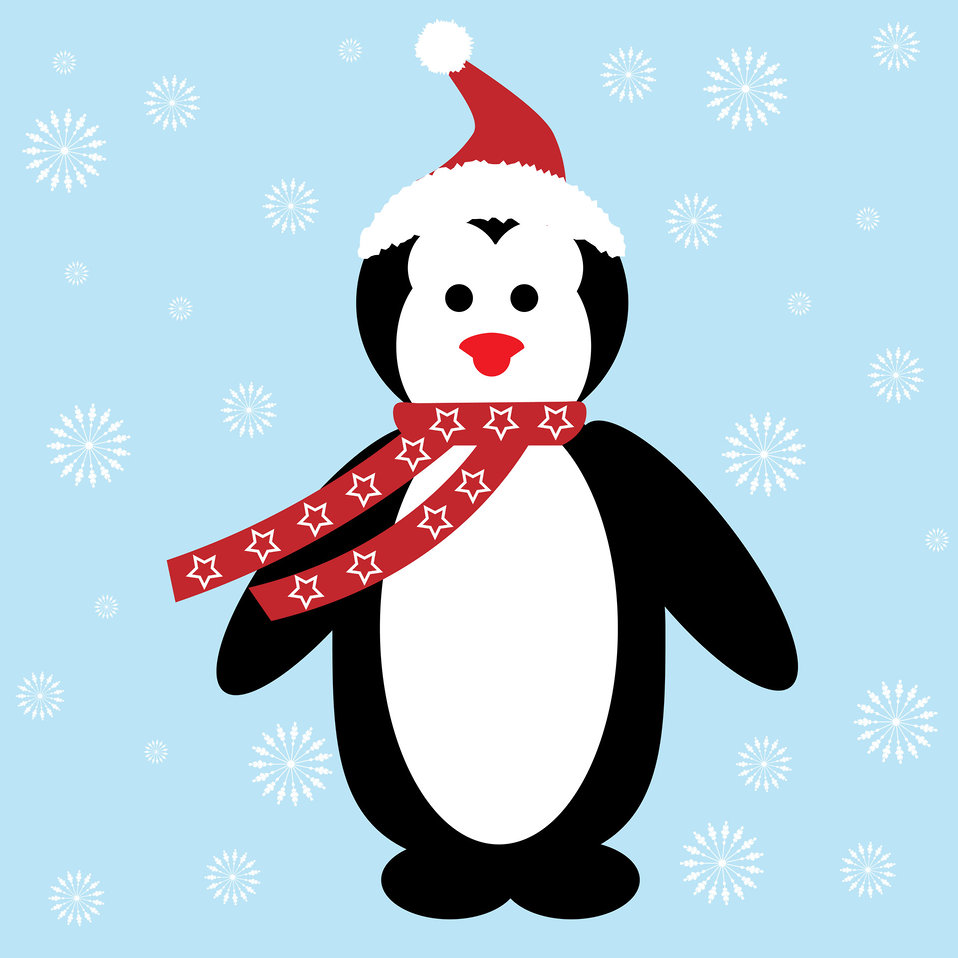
Christmas penguin

Cute christmas penguin in santa hat on snowflake background.